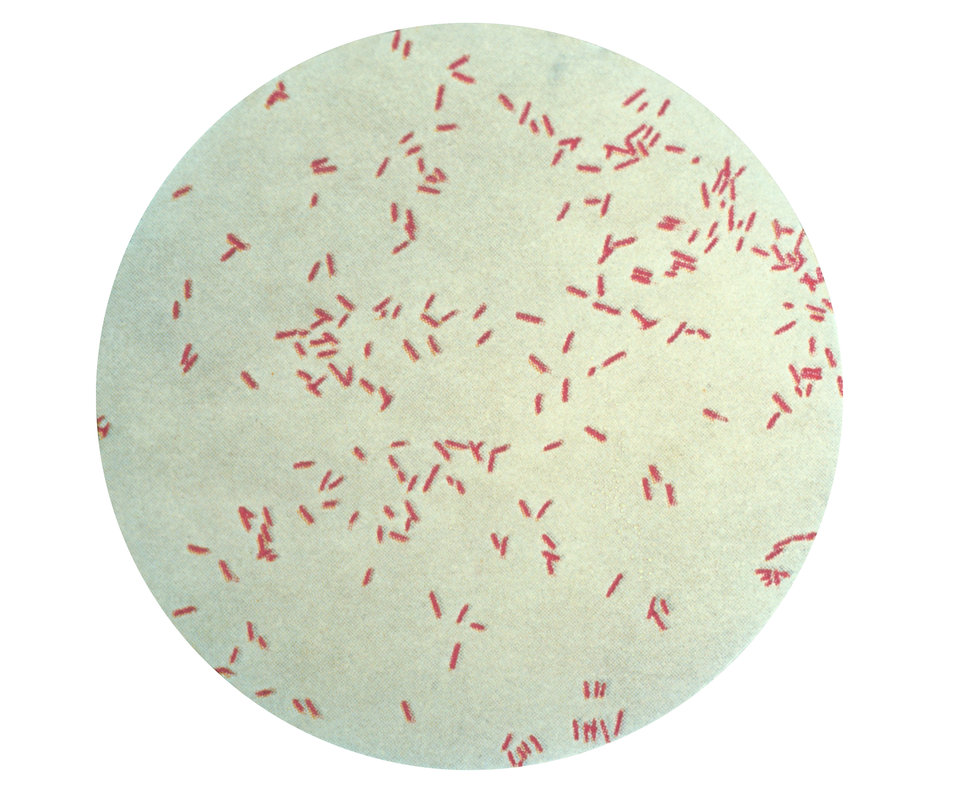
A photomicrograph of Pseudomonas aeruginosa, also known as Bacillus pyocyaneus, bacteria.